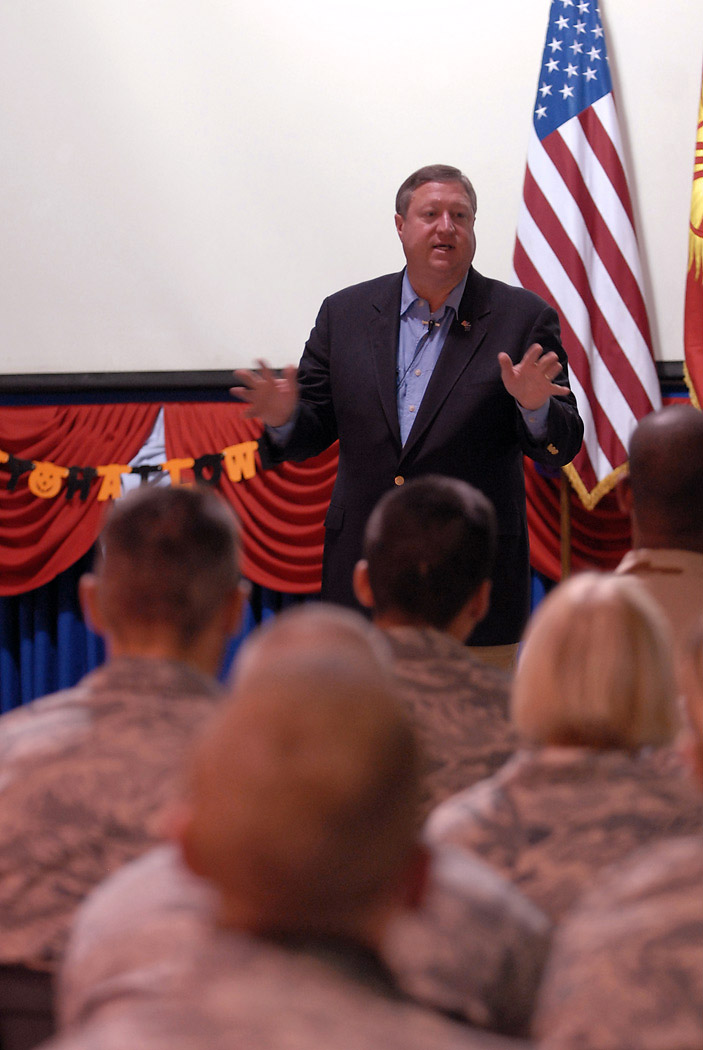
Air Force secretary visits Manas Airmen

Secretary of the Air Force Michael B. Donley addresses more than 200 personnel during an Airmen's call during his Oct. 15 visit to Manas Air Base, Kyrgyzstan. While here, he toured the base and spoke to Airmen on Air Force issues and priorities.